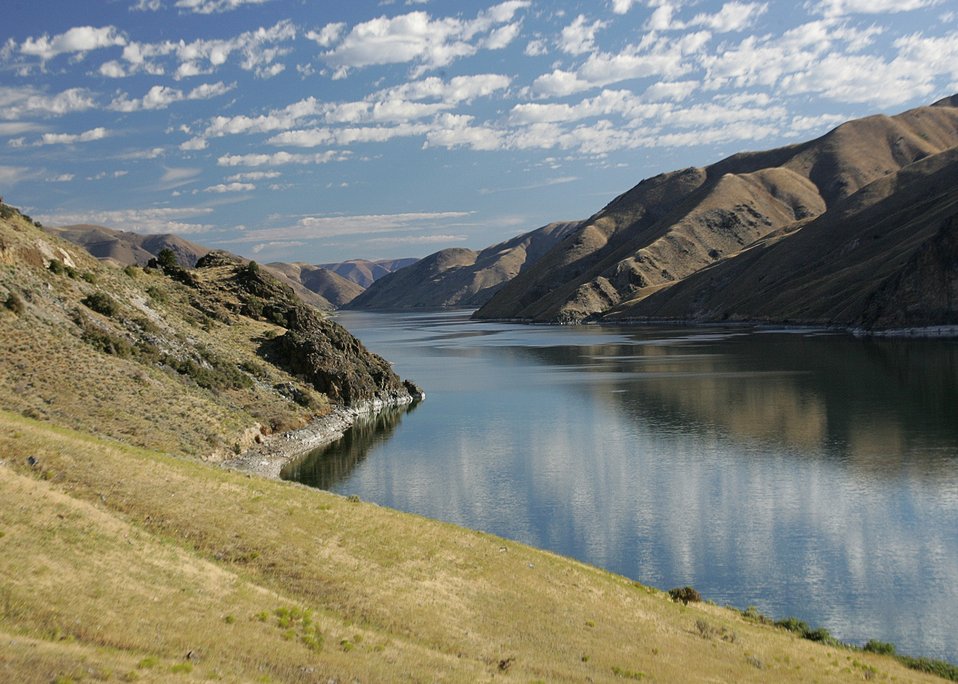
Snake River Backcountry Byway.